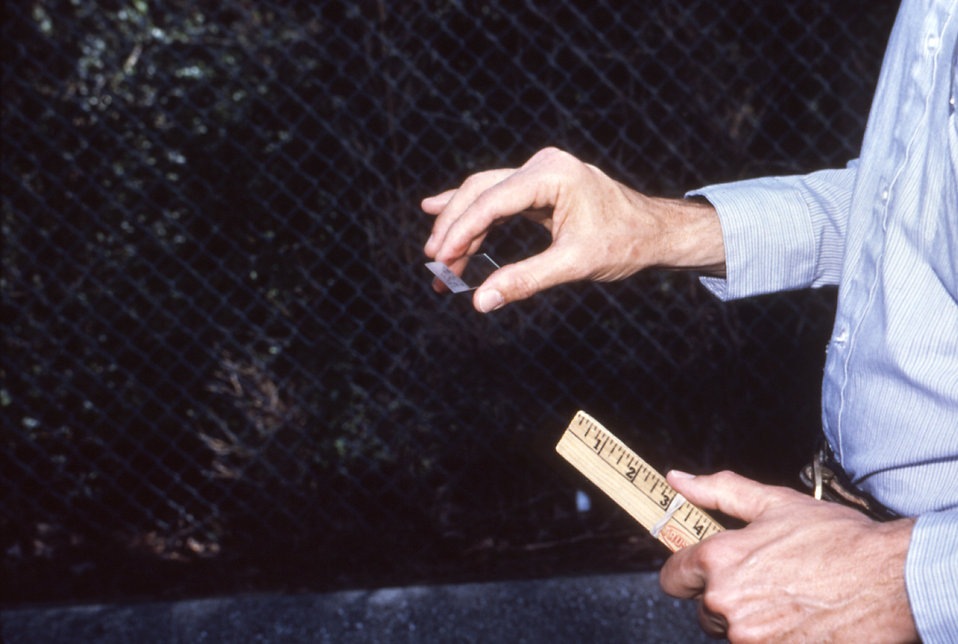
This 1981 photograph depicted a field technician as he correctly handled a fresh glass microscope slide by its edges, and on which he was about to collect data during an arbovirus vector field study.